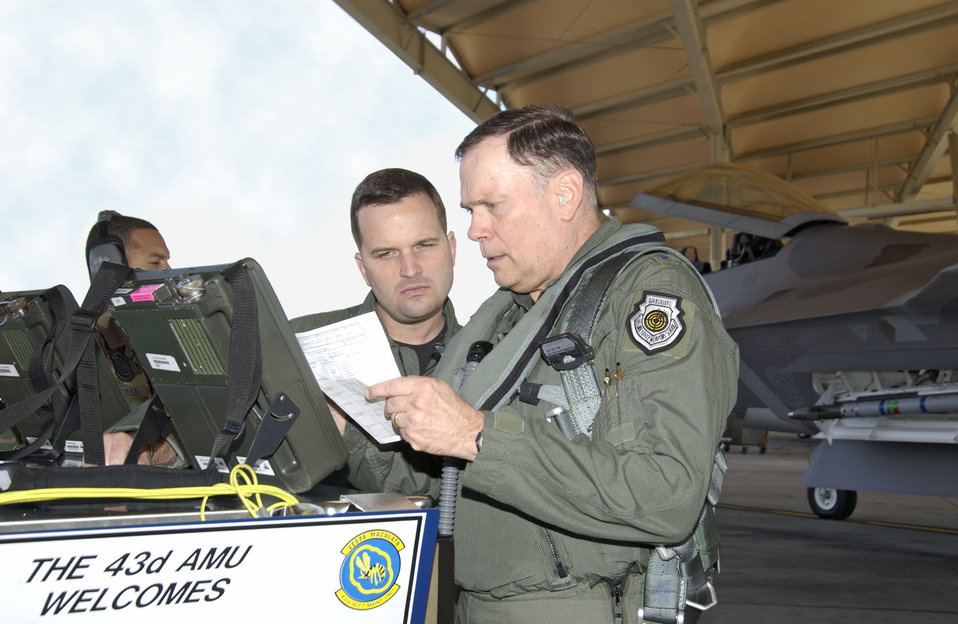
General Jumper flies F/A-22

TYNDALL AIR FORCE BASE, Fla. -- Air Force Chief of Staff Gen. John P. Jumper reviews paperwork with Maj. Steven Luczynski before the general flies a F/A-22 Raptor here Jan. 12. The Raptor makes the ninth Air Force aircraft type the general has flown. Major Luczynski is a pilot assigned to the 325th Fighter Wing.